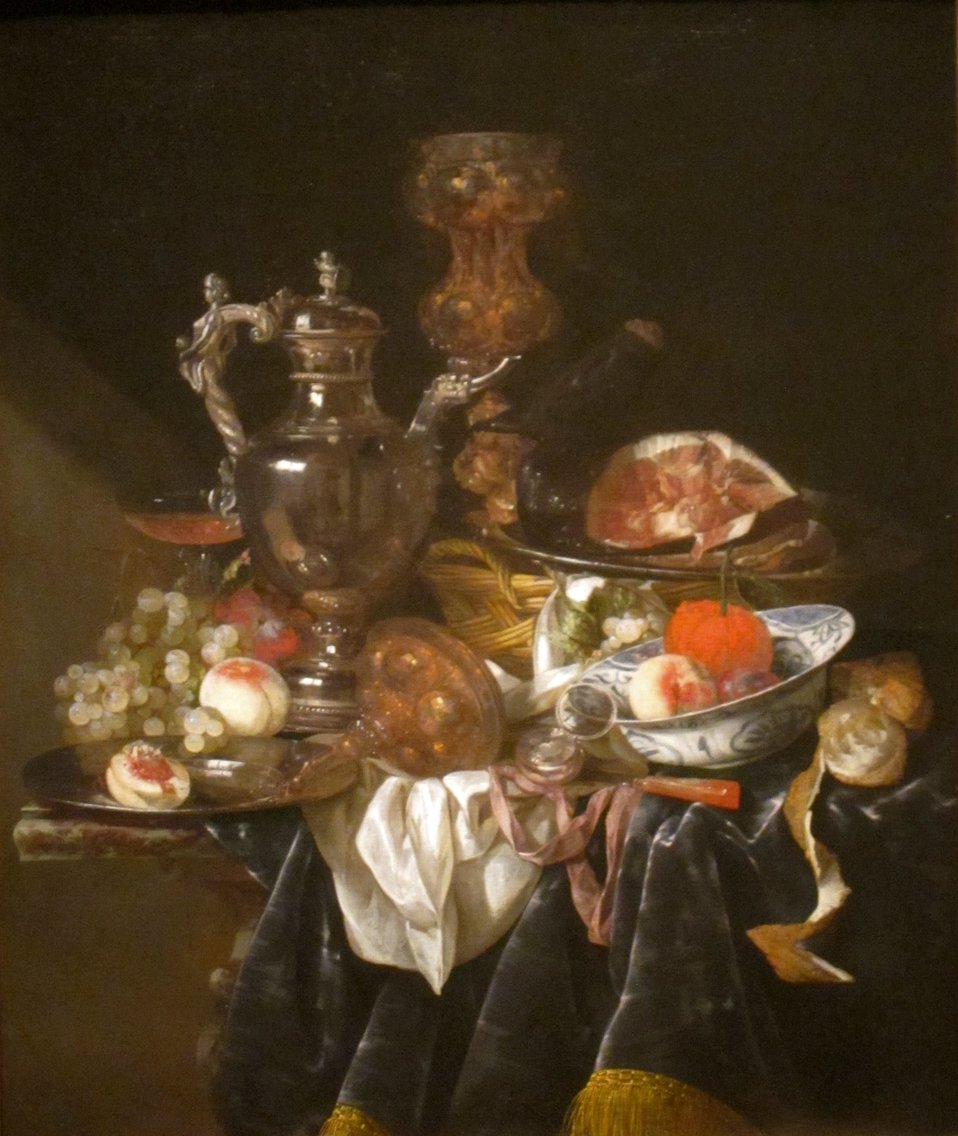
'Silver Wine Jug, Ham, and Fruit' by Abraham van Beyeren, c. 1660-1666